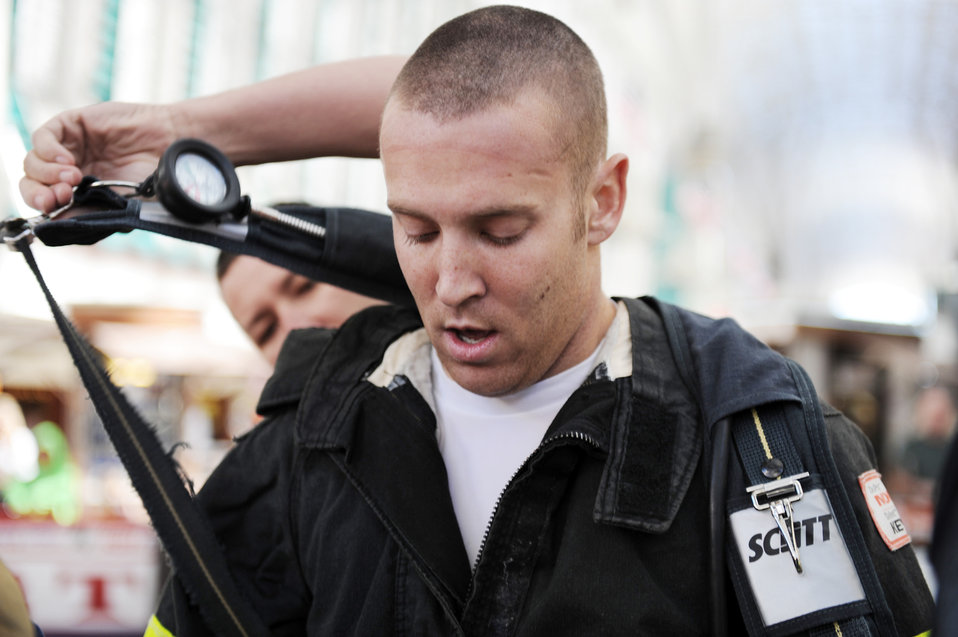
Airmen compete in 2009 Scott Firefighter Combat Challenge

Airman 1st Class Dan Baumgartner completes an individual firefighter event Nov. 17, 2009, at the 2009 Scott Firefighter Combat Challenge in Las Vegas. Airman Baumgartner is assigned to the 509th Civil Engineer Squadron at Whiteman Air Force Base, Mo.